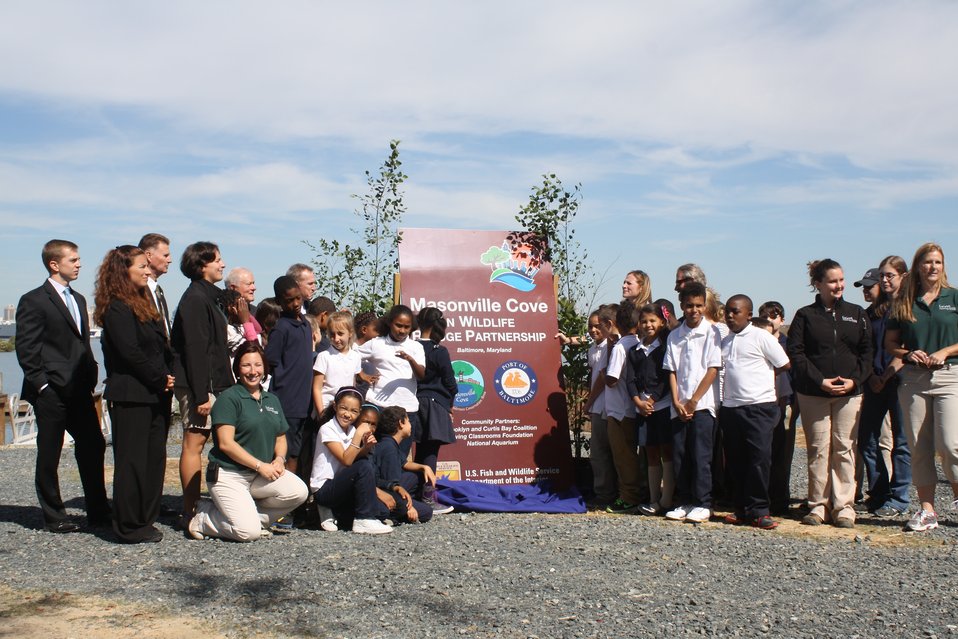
Unveiling the Masonville designation sign

Students from Curtis Bay Elementary School unveil the Masonville Cove Urban Wildlife Refuge Partnership sign along with partners.